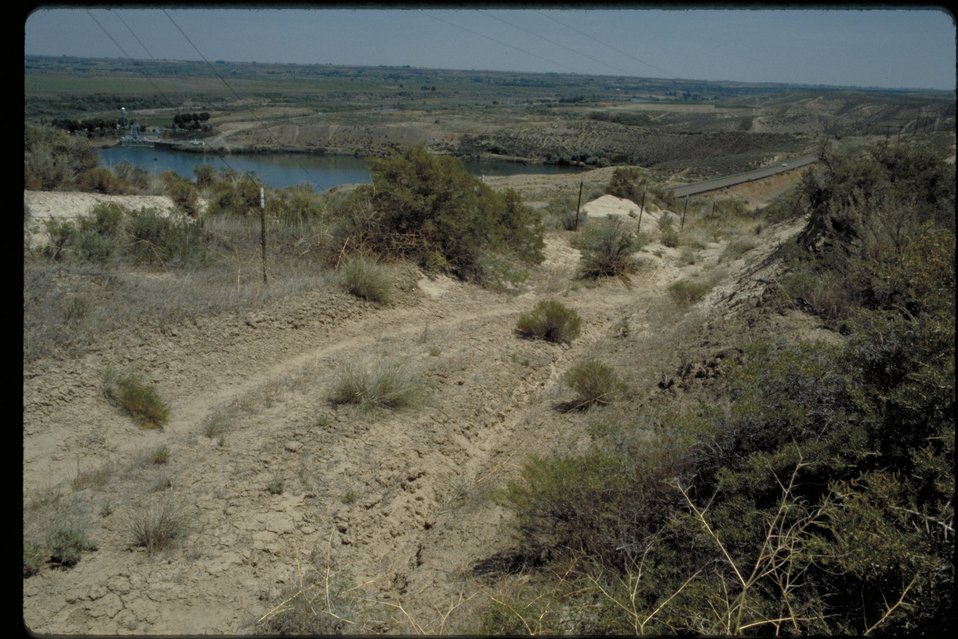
Oregon Trail west of Salmon Falls Cultural resource Historic area LSRD Lower Snake River District